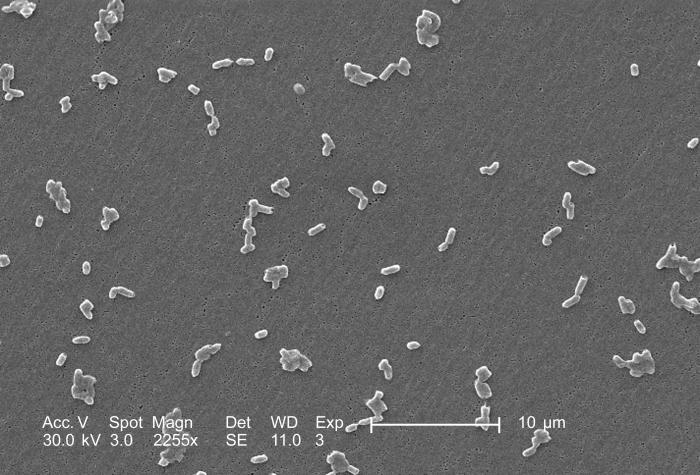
This scanning electron micrograph (SEM) depicts a number of rod-shaped, motile, Gram-negative Salmonella infantis bacteria; Magnification 2255x.